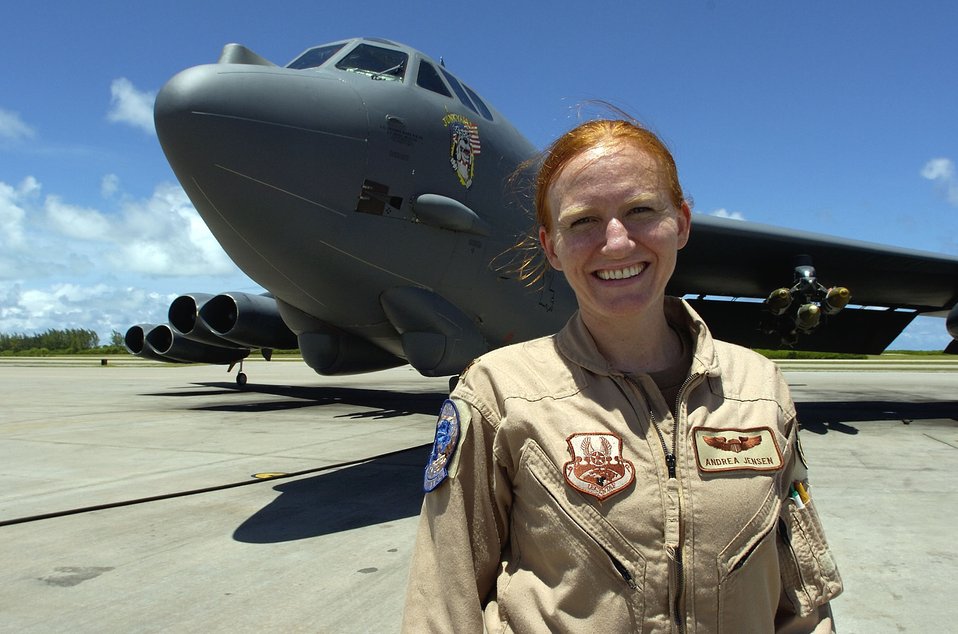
B-52 pilot shares her Air Force experiences, contributions

Maj. Andrea Jensen, 40th Expeditionary Group B-52 pilot, stands in front of a B-52 Stratofortress. Major Jensen has accumulated 100 combat flying hours providing close-air support for forces on the ground in Afghanistan.